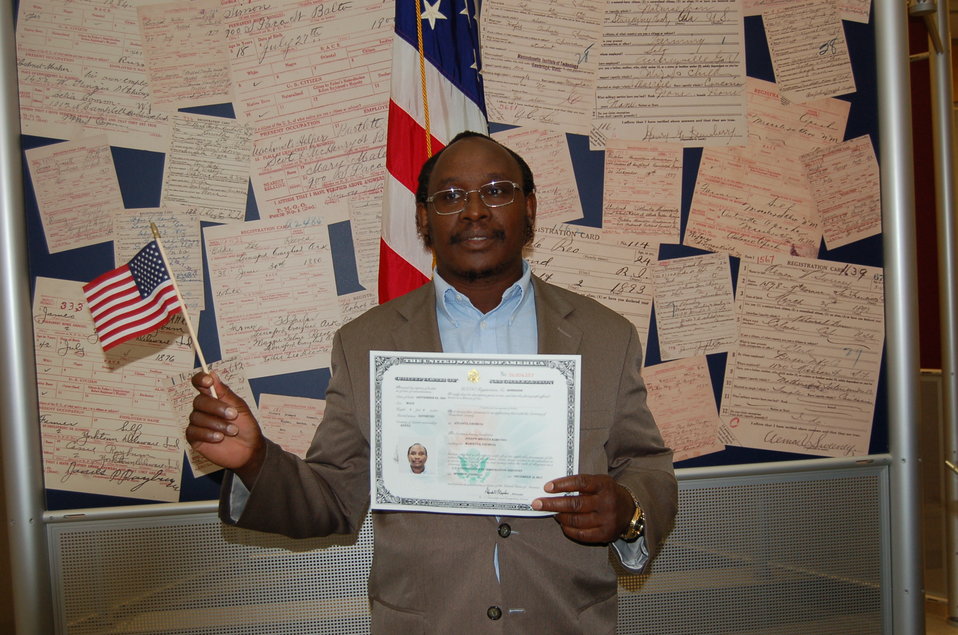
New Citizens